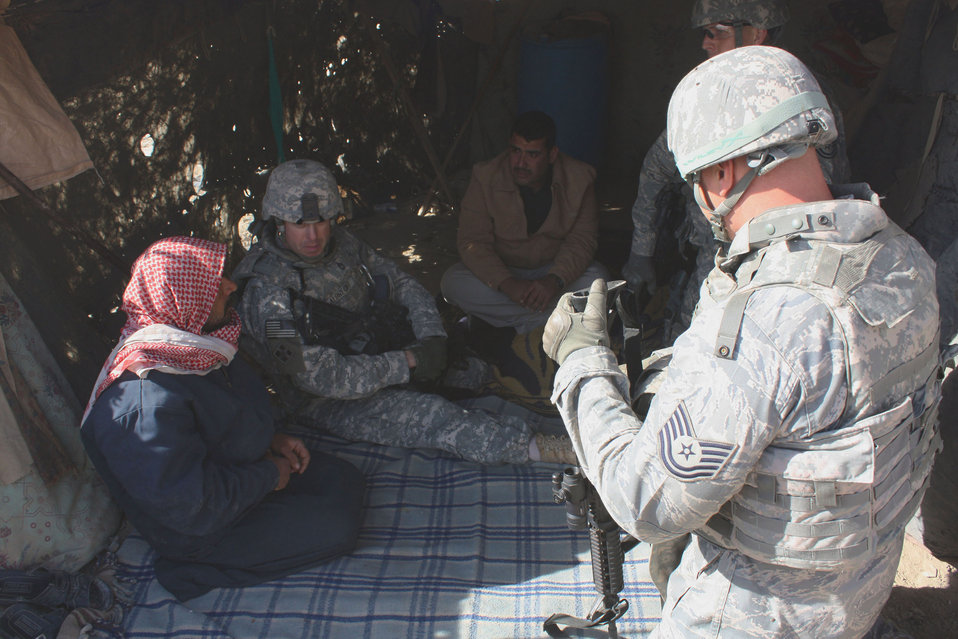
Airman joins Soldiers in aiding camps in Iraq

Tech. Sgt. Joseph Slysz and Army Sgt. 1st Class Kevin Albrecht talk with an Iraqi man at his home Dec. 16, 2008, outside Contingency Operating Base Adder near the city of Nasiriyah, Iraq. Sergeant Slysz is the NCO in charge of criminal intelligence for the 732nd Provost Marshal Office Det. 5. He is deployed from Edwards Air Force Base, Calif. Sergeant Albrecht is assigned to the 4th Special Troops Battalion, 4th Brigade Combat Team, 1st Cavalry Division.